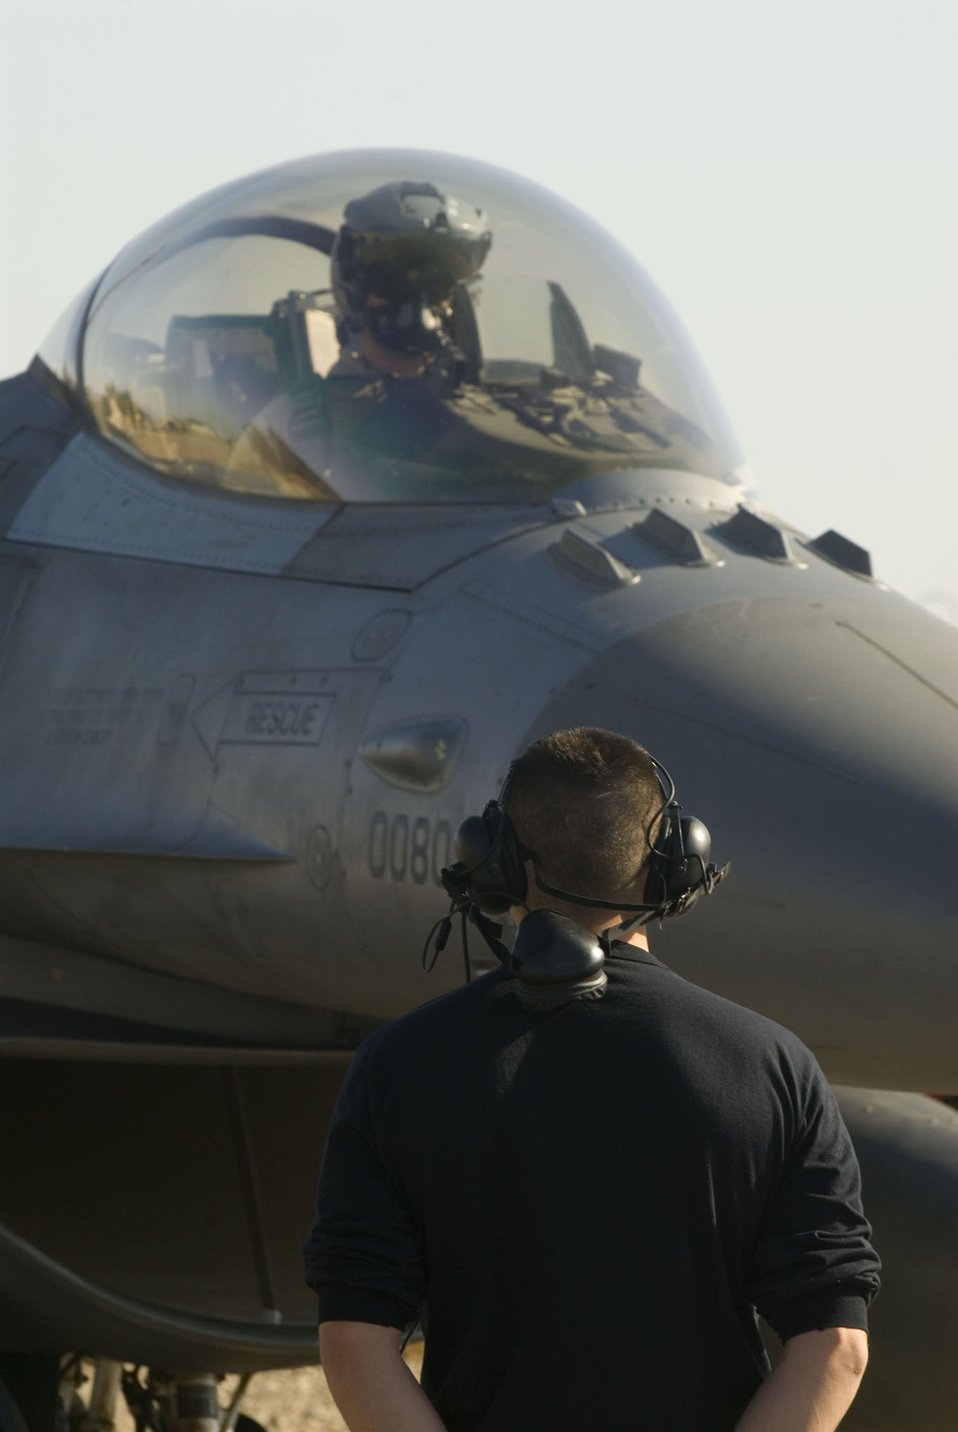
Preparing to launch

Staff Sgt. William Howe prepares to taxi Capt. Travis Keenan out to the runway Dec. 17 at Balad Air Base, Iraq. After radio communication is disconnected, the pilot and crew chief correspond through hand signals. Sergeant Howe, a 332nd Expeditionary Aircraft Maintenance Squadron crew chief, and Captain Keenan, a 22nd Expeditionary Fighter Squadron pilot, are deployed from Spangdahlem Air Base, Germany.